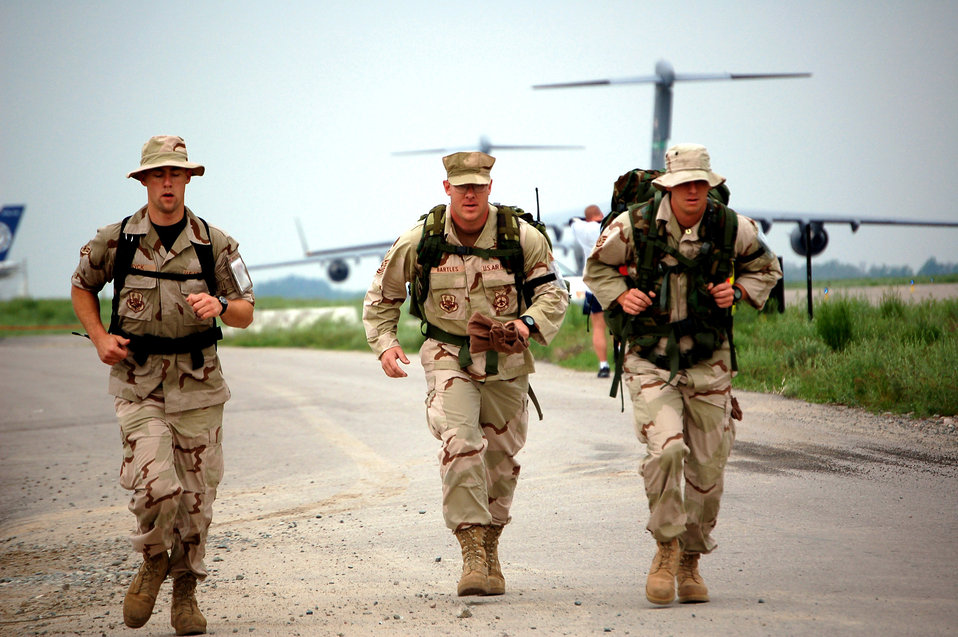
Hometown tradition

From left, Airman 1st Class Sean Syck, Tech. Sgt. Brian Bartles and Staff Sgt. Michael Tyburski run in the Bloomsday Away 12K race at Manas Air Base, Kyrgyzstan, on Sunday, May 7, 2006. The Bloomsday race is annual tradition in Spokane, Wash. This year, Airmen brought their own version of the race to Manas.